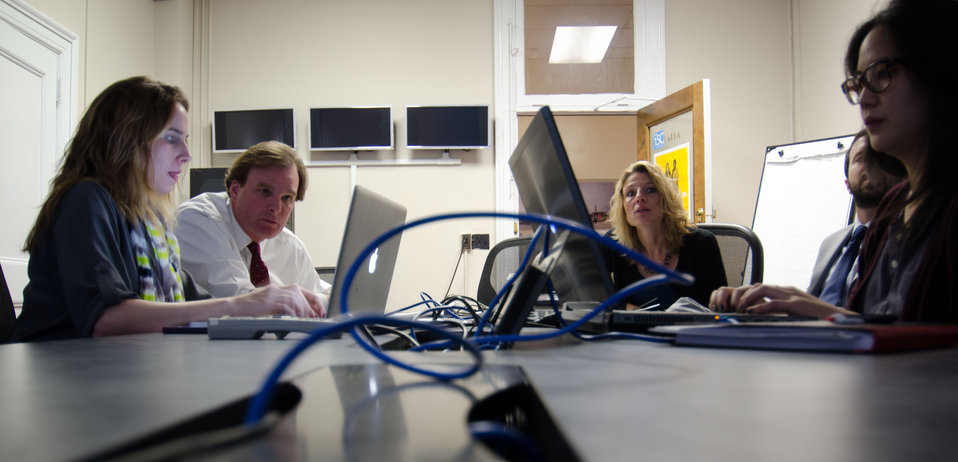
Blue Ethernet cables keep computers connected to the internet as U.S. Department of Agriculture Senior Advisor to the Secretary for Environment and Climate Change Robert Bonnie (white shirt) hosts a live Virtual Office Hours session on Twitter, in Washington, D.C. on Thursday, November 29, 2012. Supporting the event are Office of Communications Director of Web Communications Amanda Eamich (left), Natural Resources Conservation Service Internal/External Communications Team Lead Jody Holzworth (center), Forest Service Media Relations Officer Lawrence Chambers (second from right), and Deputy Press Secretary Stephanie Chan (right, at computer. Online questions about U.S. Department of Agriculture's (USDA) record on conservation achievements and efforts to reconnect Americans to the great outdoors were answered during the event. Questions were submitted live and in advance to the @USDA Twitter account using the hashtag #AskUSDA.